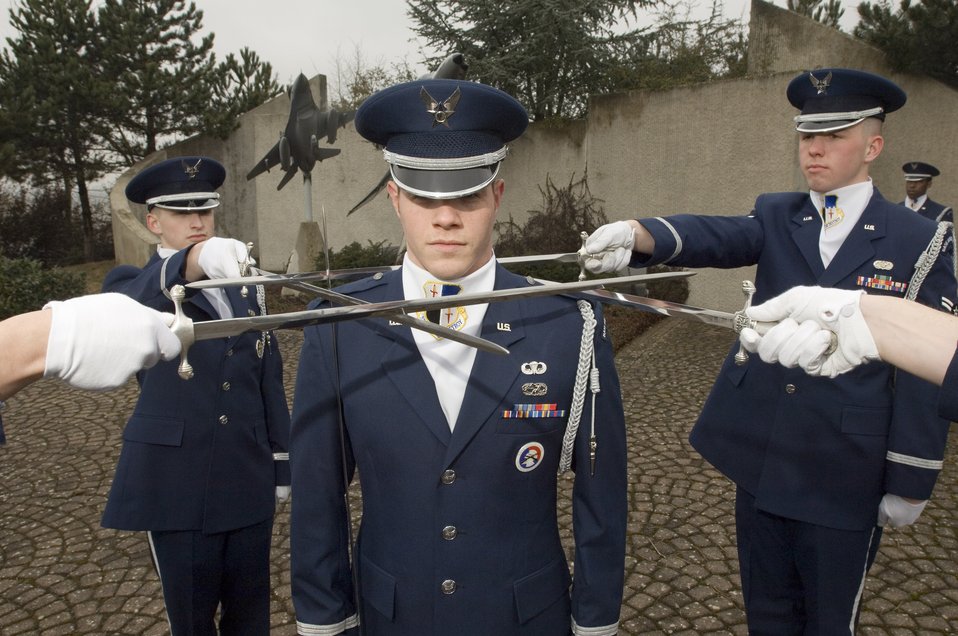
Airmen toss sabers to honor comrades

First Lt. Brian Cooper stands in the middle of fellow Sabre Drill Team members Airmen 1st Class Dallas Smith and Jacob McCarty, left and right, respectively, at a practice session at Spangdahlem Air Base, Germany, on Tuesday, March 21, 2006. Lieutenant Cooper is a maintenance flight commander for the 52nd Equipment Maintenance Squadron. Airman Smith is a computer networking cryptographic switching system journeyman with the 606th Air Control Squadron. Airman McCarty is a quality assurance evaluator with the 52nd Civil Engineer Squadron.